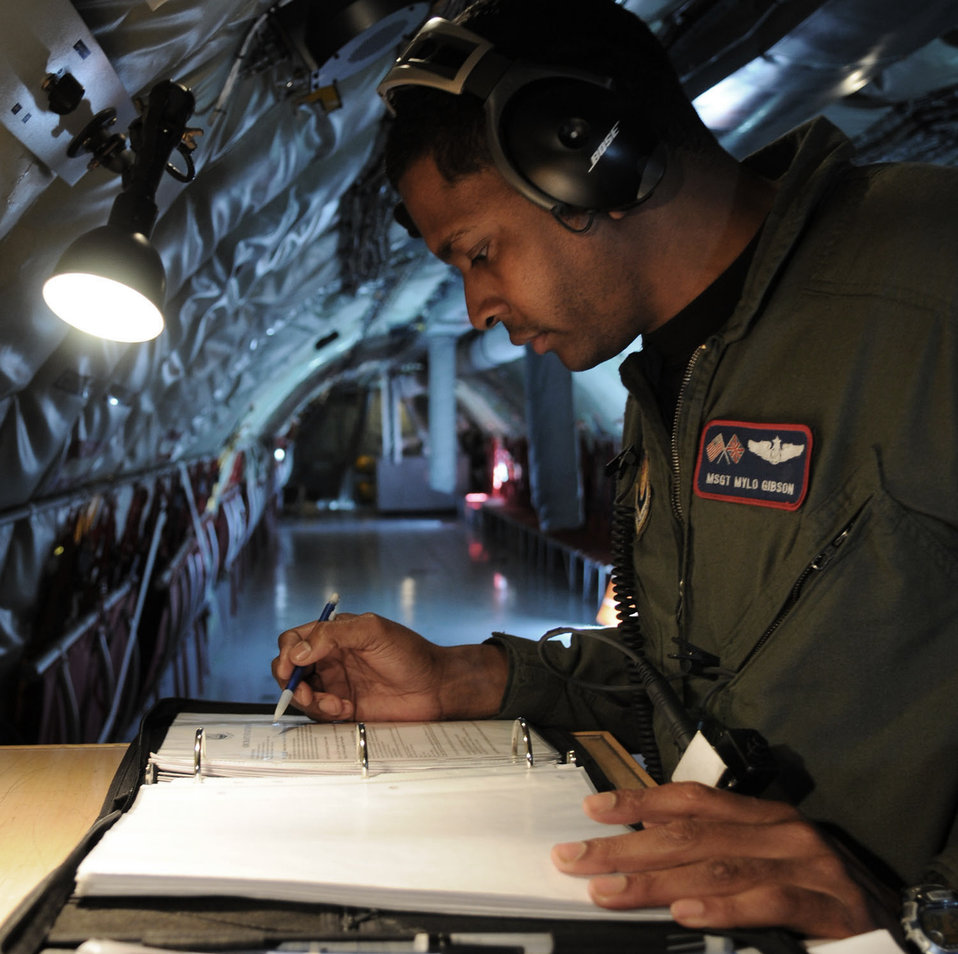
Keeping a tally

Master Sgt. Mylo Gibson records the amount of fuel he transferred April 7 during a multinational exercise over the Baltic States of Estonia, Latvia and Lithuania. Sergeant Gibson is a boom operator assigned to the 351st Air Refueling Squadron at Royal Air Force Mildenhall, England.